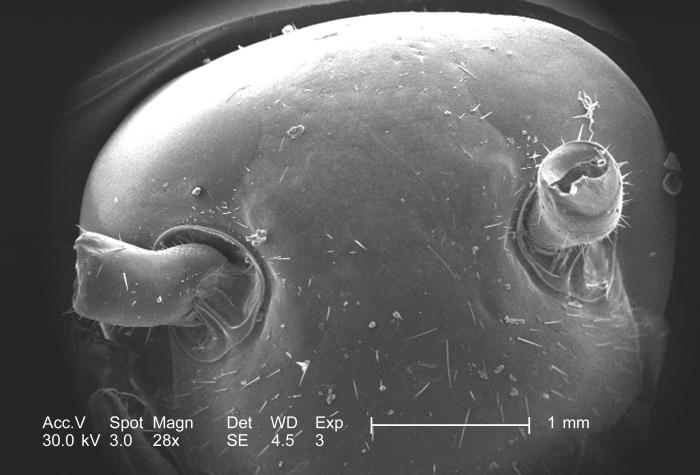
Magnified 28x, this 2005 scanning electron micrograph (SEM) depicted the head region of a roach found deceased in a Decatur, Georgia home. Each of the two antennae was fractured off where the first segment, known as the 'scape', joined the 'pedicle', or the second antennal segment. The antenna on the right is situated in such a way that its interior, or 'lumen', is made visible, and appears to be hollow. When it was alive, the roaches blood, known as 'hemolymph', and some of the antennal soft tissues such as musculature and sensory innervation, would have filled these now hollow, tube-like structures.